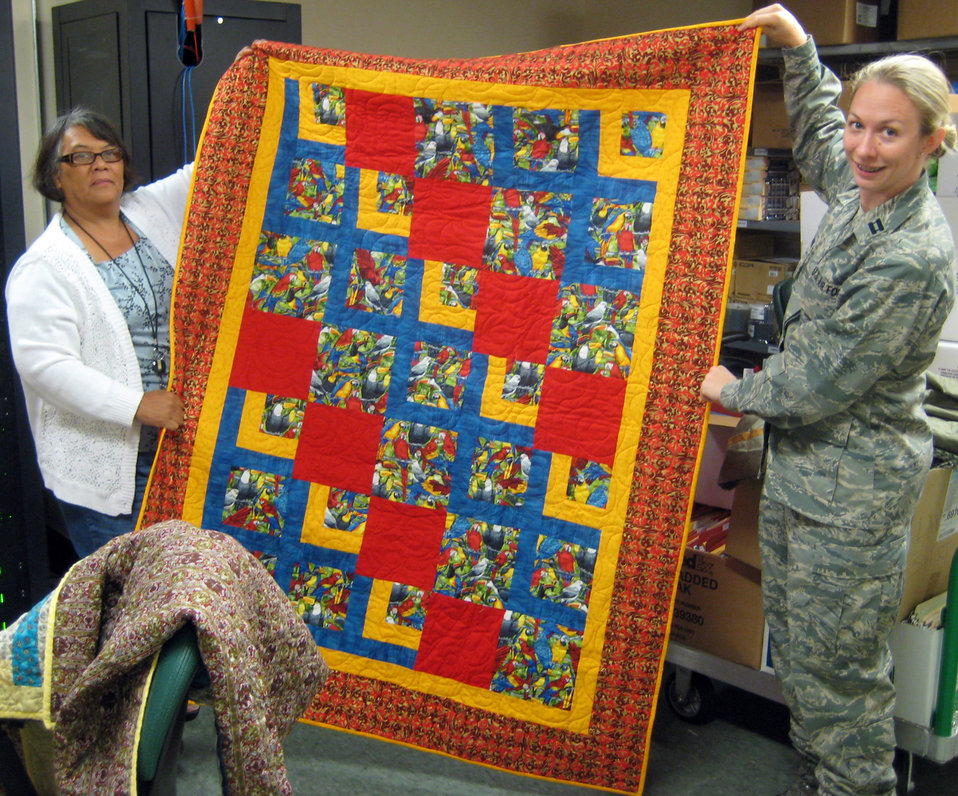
Quilts of Valor a comfort for complex wartime emotions

Angie Carr and Capt. Sandra Bannan display a Quilt of Valor June 12 at the Air Force Mortuary Affairs Operations Center located at Dover Air Force Base, Del. Quilts of Valor have been awarded to several hundred workers at the center since late 2006.